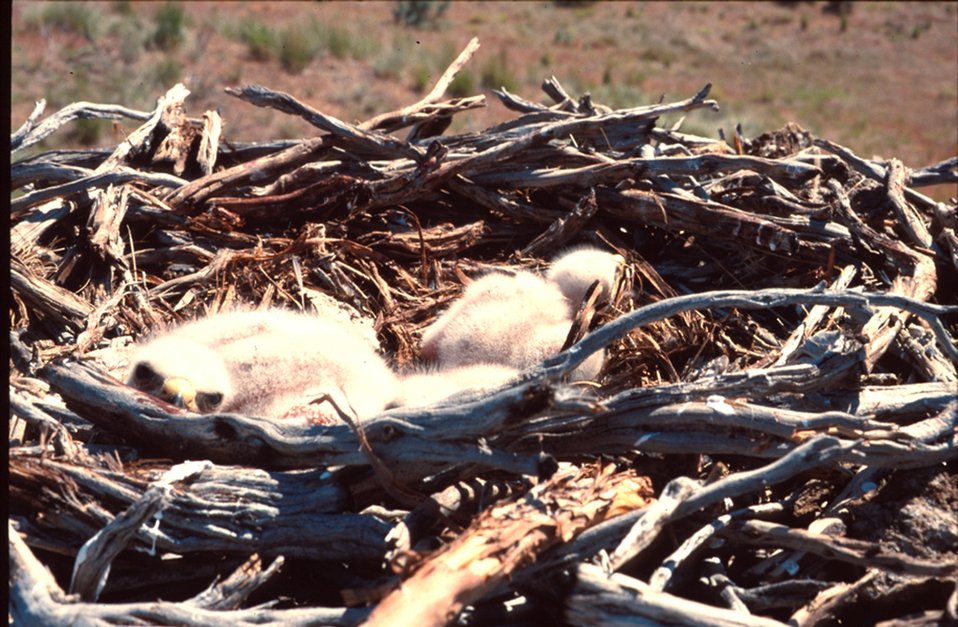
Ferrugenous Hawk hatchlings Owyhee Field Office LSRD Lower Snake River District